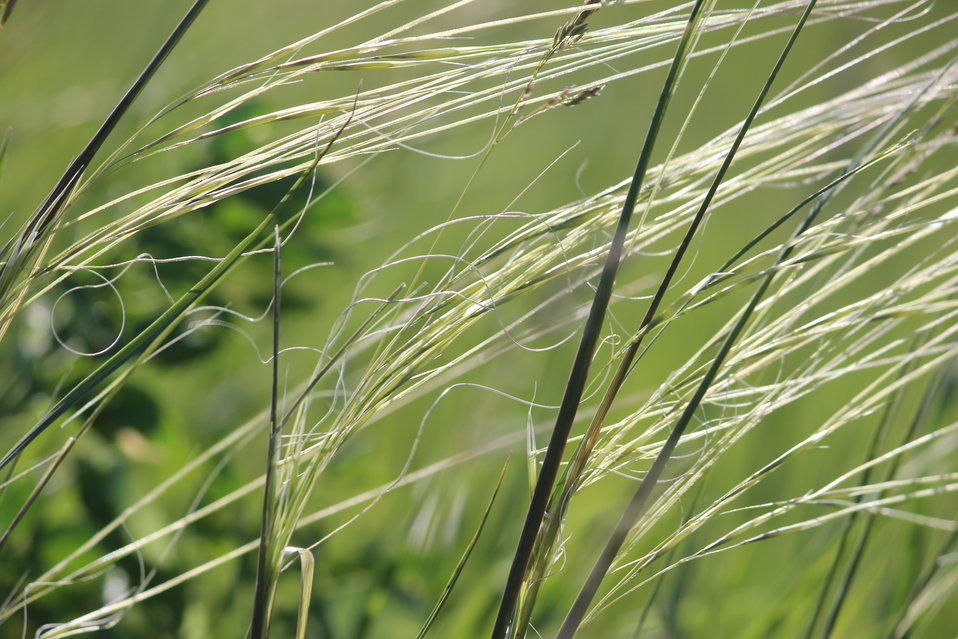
Porcupine Grass (Closeup)

Stipa spartea (Porcupine grass) is a needlegrass with a long awn (the 'hair' extending from each seed). The seed of these cool season grasses is very sharp and twists to seed itself into the ground with help from the awn. However, these needles can cause problems to cattle and other grazers when foraged too late. In some cases, the mature needle can work its way through the hide, flesh, or organs of its consumer. It is a bunchgrass native to the prairies of North Dakota, that generally decreases with grazing pressure.